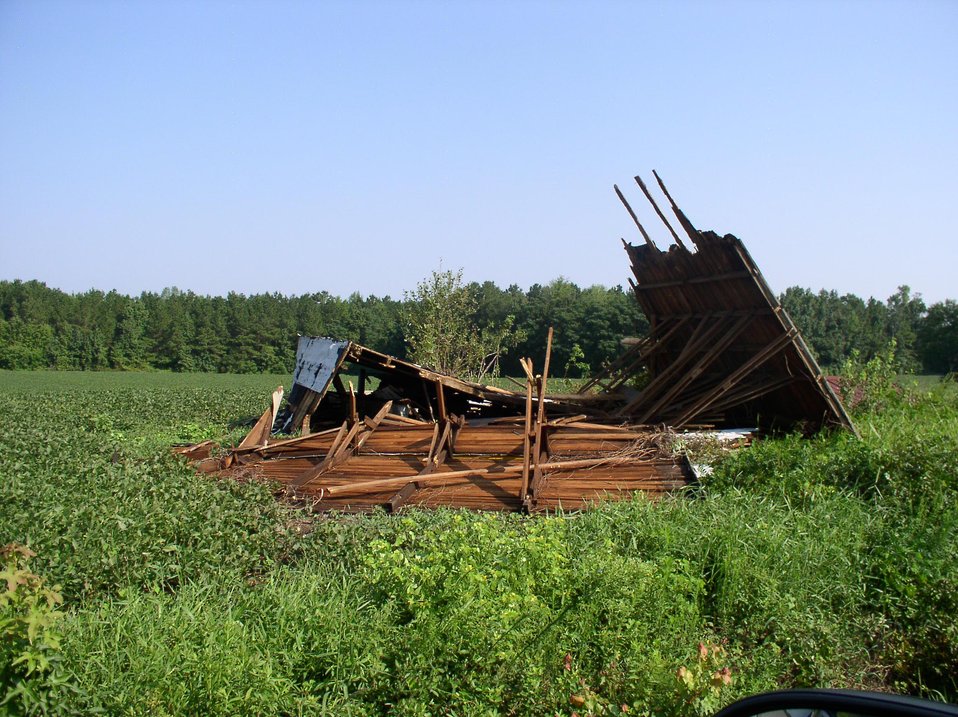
Drying barn knocked down during Hurricane Irene in Pender County, NC, on Monday 29, 2011.